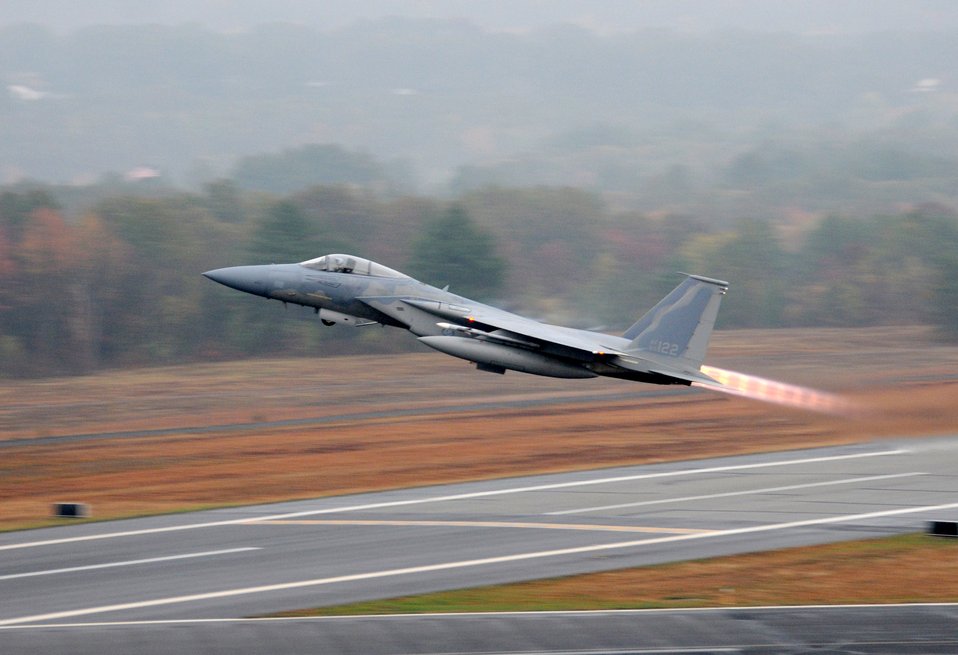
Training with the eagles

An F-15 Eagle takes off from Barnes Air National Guard Base, Mass., while participating in a training mission Oct. 21, 2010. The Massachusetts Air National Guard's 104th Fighter Wing provides air sovereignty alert support, protecting the northeastern United States.